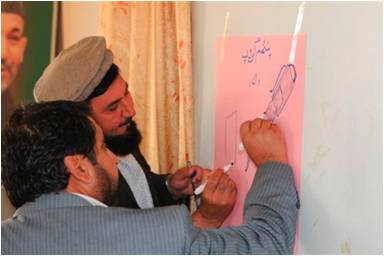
GIRoA Officials Convene for Budget Seminar